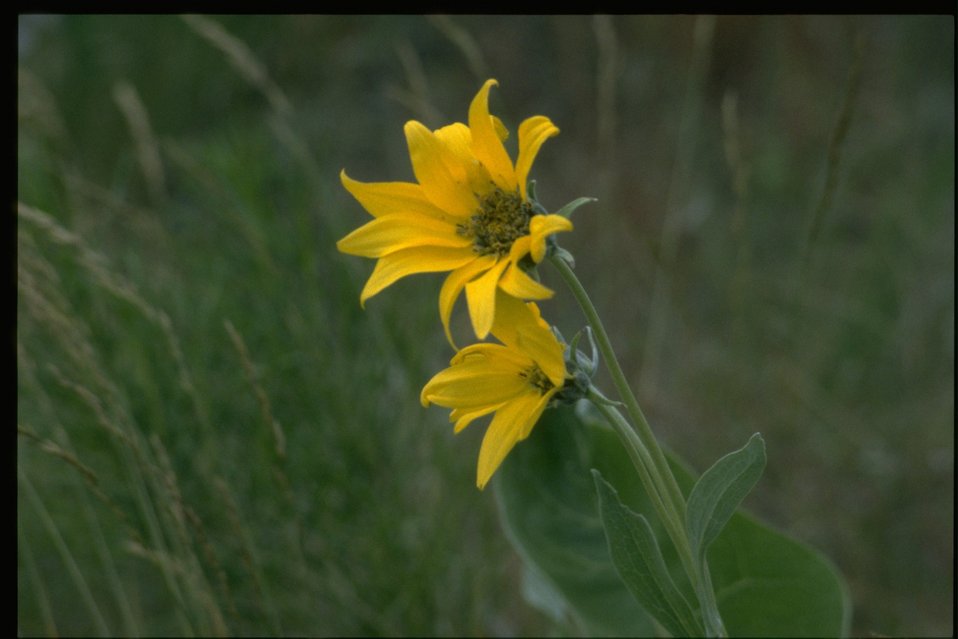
Medium shot of Balsam Root wildflower.